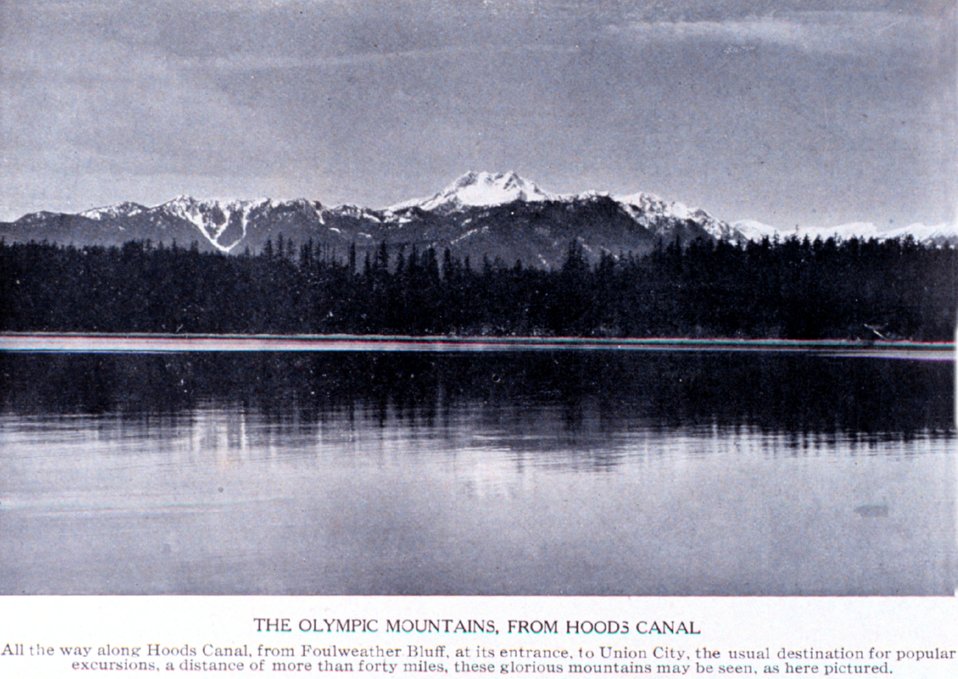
'The Olympic Mountains from Hoods Canal'. In: 'Puget Sound and Western Washington Cities-Towns Scenery', by Robert A. Reid, Robert A. Reid Publisher, Seattle, 1912. P. 140.